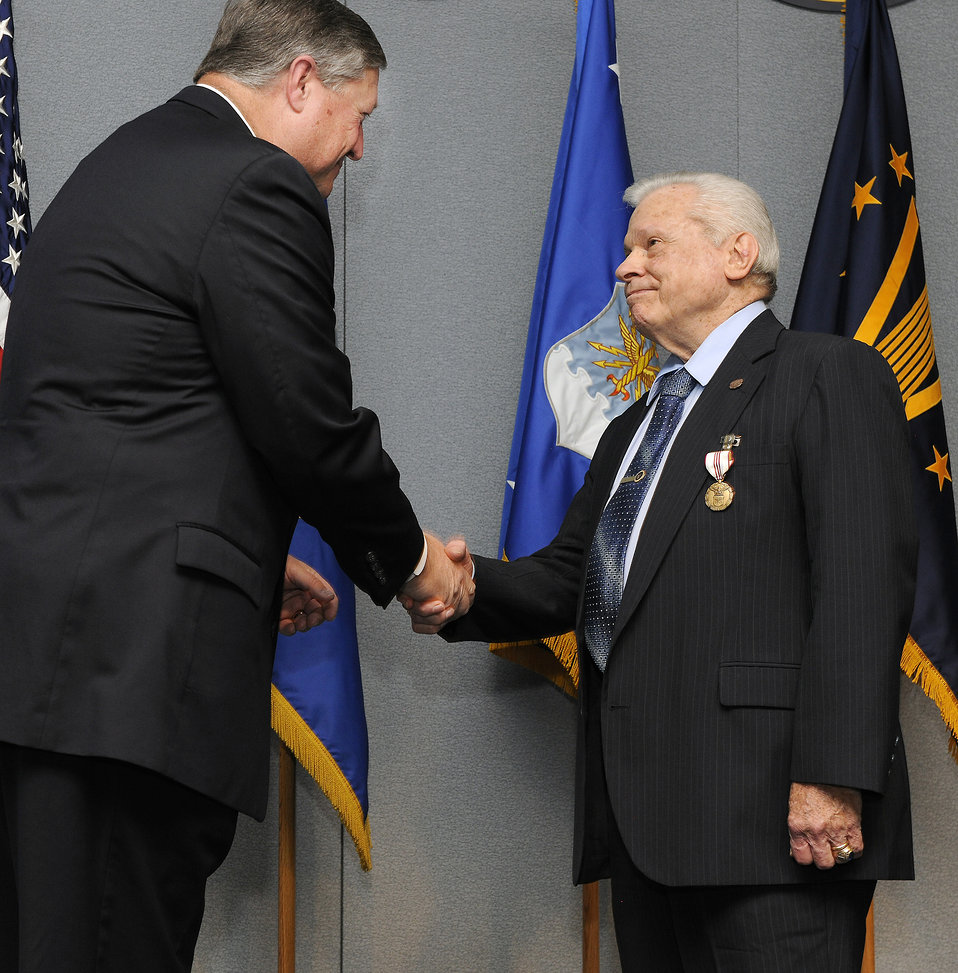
AF Review Boards Agency director

Secretary of the Air Force Michael Donley thanks Joe Lineberger, the Air Force Review Boards Agency director, for his service during his retirement ceremony Jan. 31, 2012, at Joint Base Andrews, Md.